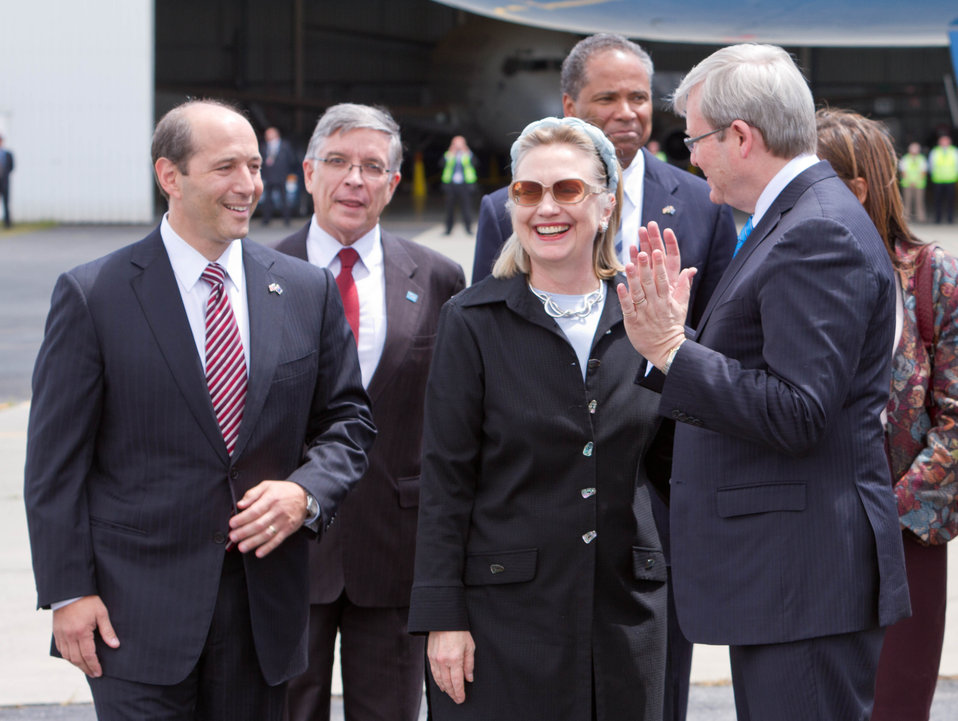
Ambassador Bleich, Secretary Clinton, and Australian Foreign Minister Rudd Chat

U.S. Ambassador to Australia Jeff Bleich, U.S. Secretary of State Hillary Rodham Clinton, and Australian Foreign Minister Kevin Rudd chat before her departure from Melbourne airport in Melbourne, Australia, on November 8, 2010.